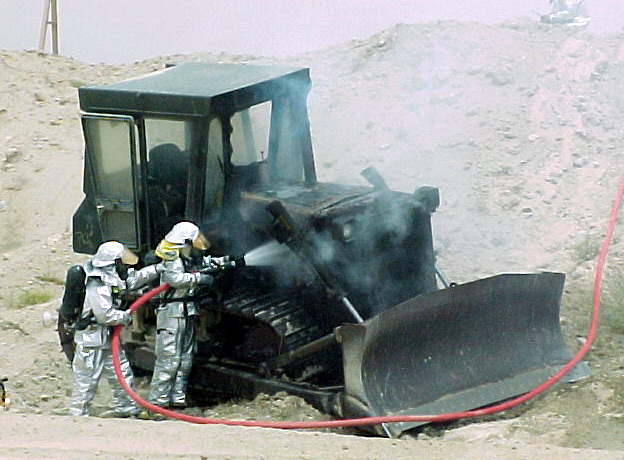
Firefighters respond to blaze

SOUTHWEST ASIA -- Firefighters with the 386th Expeditionary Civil Engineer Squadron extinguish a bulldozer fire near the flightline at a forward-deployed location. The cause of the fire is under investigation.